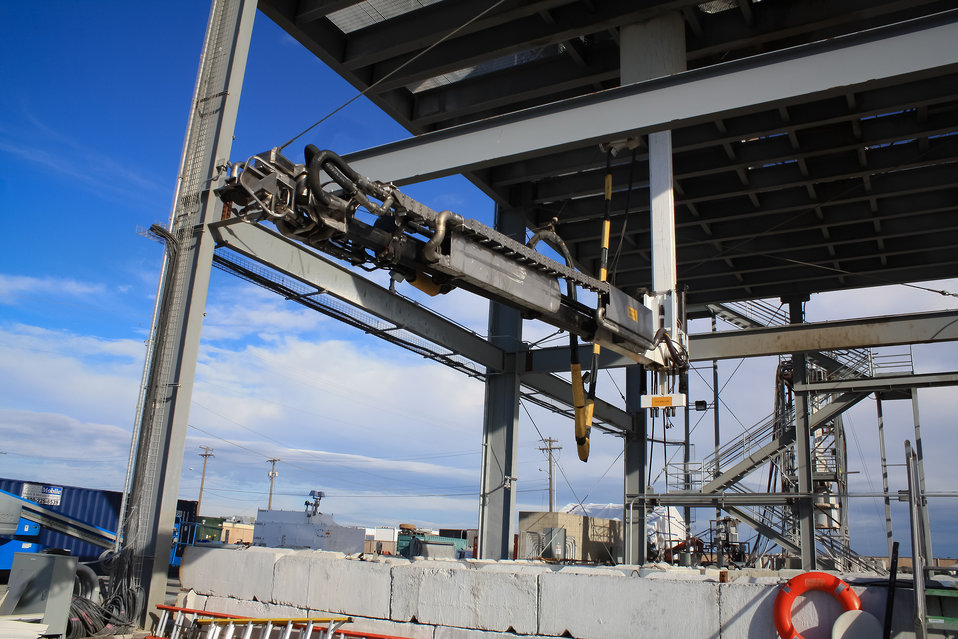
This retrieval tool is vacuum version of the Mobile Arm Retrieval System that was developed to extend inside the tank to reach waste at all parts of the tank more effective retrieval while using less liquid.
This MARS-V is intended for deployment in C-105, a tank that has possibly leaked since it was placed in service in the 1940s making it a good candidate for this dry retrieval method.